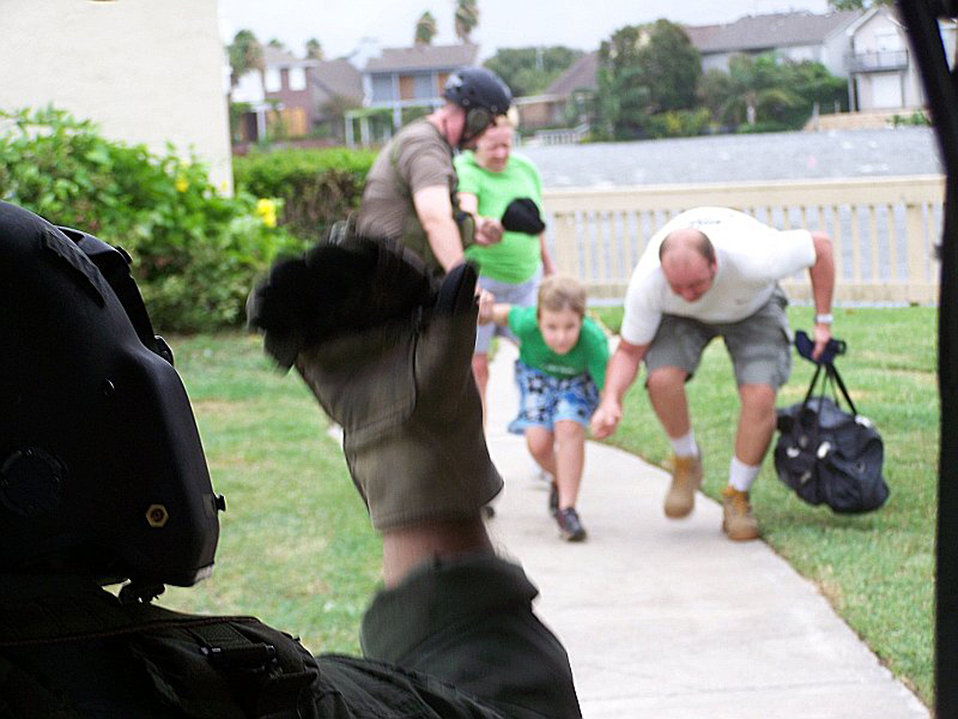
JTF-129 Airmen rescue civilians stranded in Galveston

Joint Task Force-129 crew, Jolly 92, rescues a family of four in Galveston, Texas, Sept. 12.